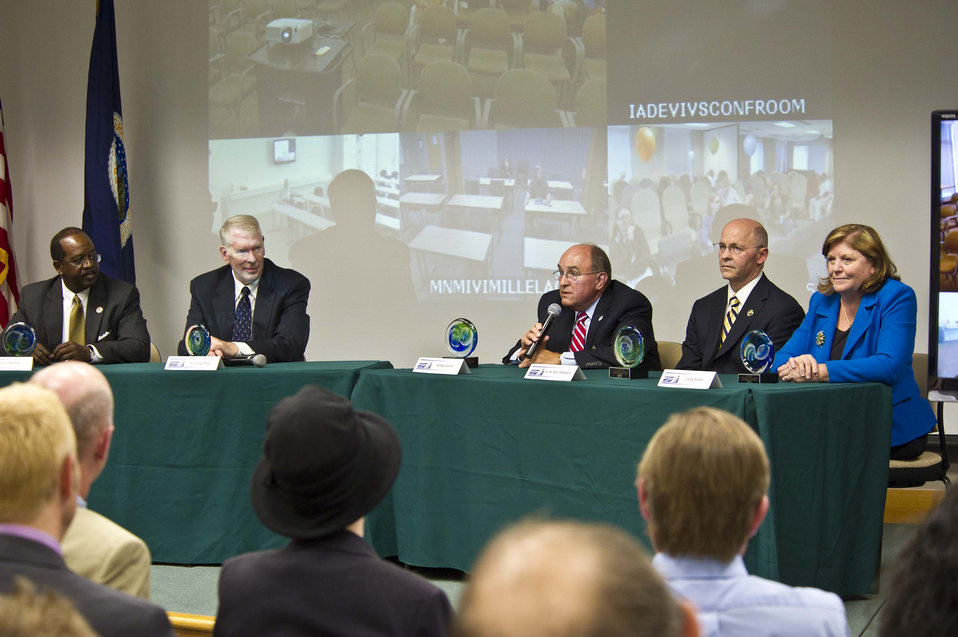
A panel of former U.S. Department of Agriculture (USDA) Animal and Plant Health Inspection Service (APHIS) Administrators share their experiences with assembled guests at the 40th anniversary celebration of the creation of APHIS on May 16, 2012. (L to R Former USDA APHIS Administrators Terry Medley, Craig Reed, Bobby Accord, Ron DeHaven, and Cindy Smith).